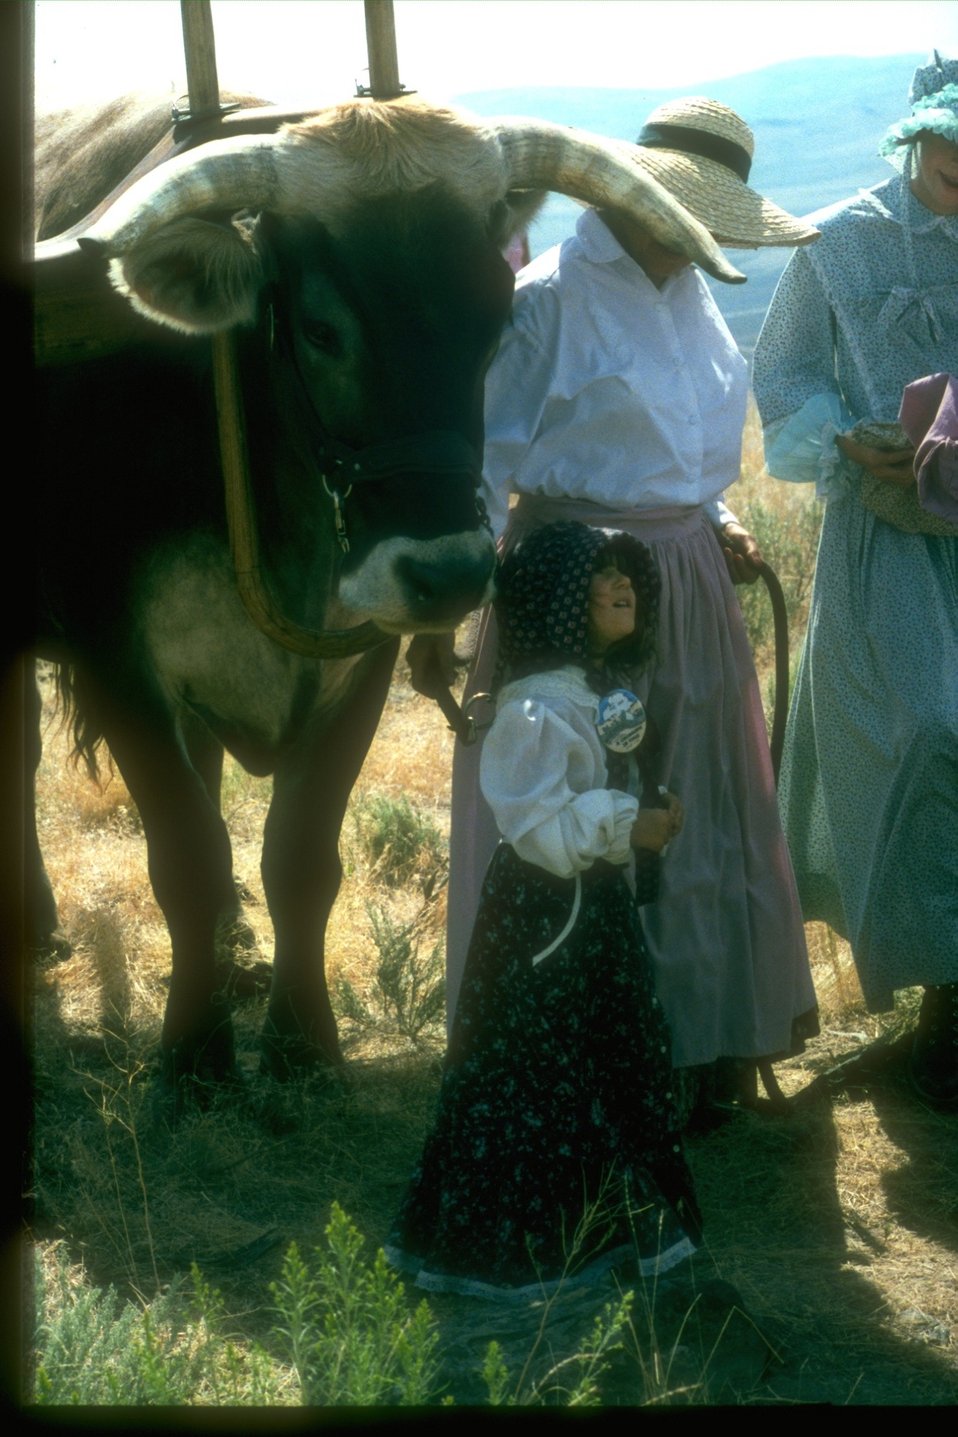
A living history with women and a child dressed in clothes from pioneer days. A large ox is standing by the young girl.